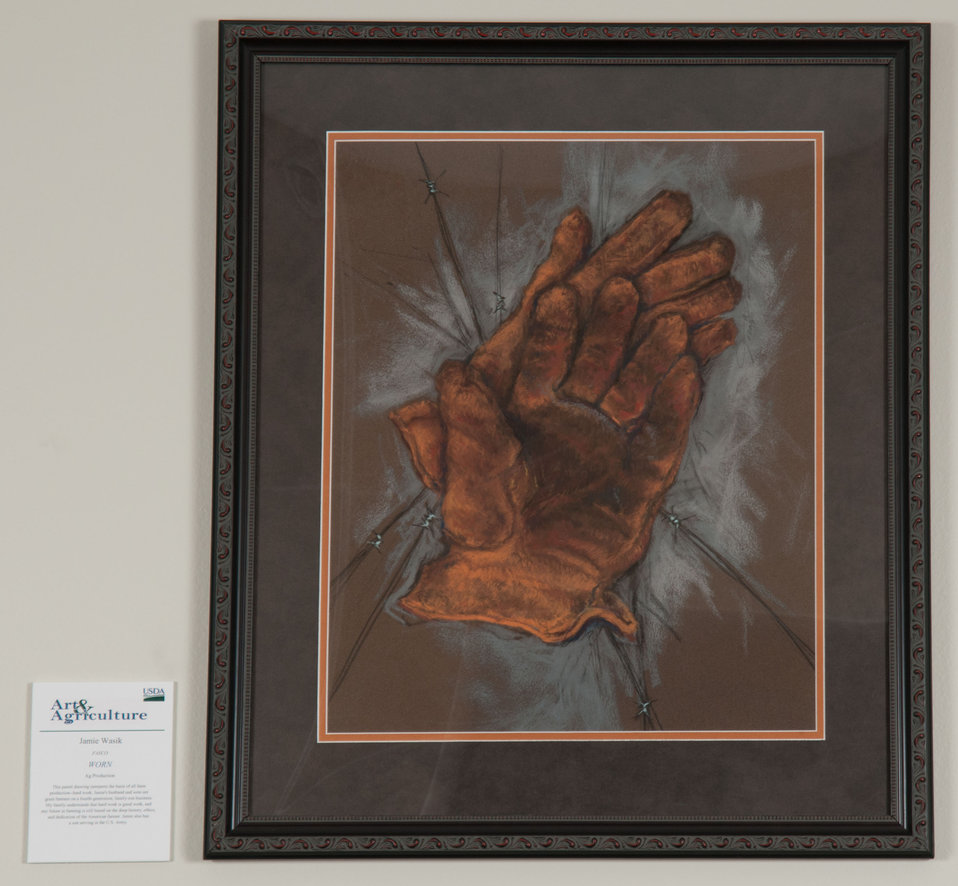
Online Viewer's Choice entries of the 2013 Art & Agriculture, Tuesday, July 9, 2013, in the South Building, Washington, D.C. Themes were expressed by employees from across the department and the contest was open to full-time and part-time USDA employees. Winning artwork will be displayed till the end of the year. U.S. Artistic expression is a creative outlet that is vital for an individual to grow and develop.